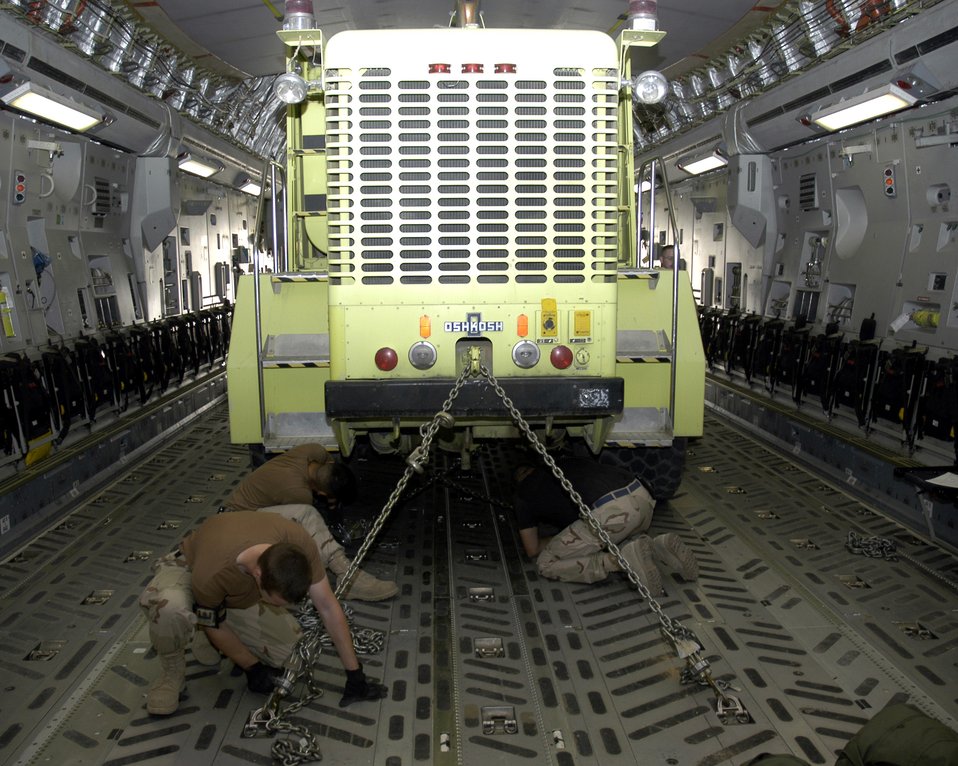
Air Force, Navy deliver firetrucks donated by Baltimore

Airmen from the 386th Expeditionary Logistics Readiness Squadron use chains to secure a fire and rescue truck April 19 inside a C-17 Globemaster III in Southwest Asia. The truck is one of two donated by Baltimore officials and bound for Mazar-i-Sharif Airport in Northern Afghanistan.